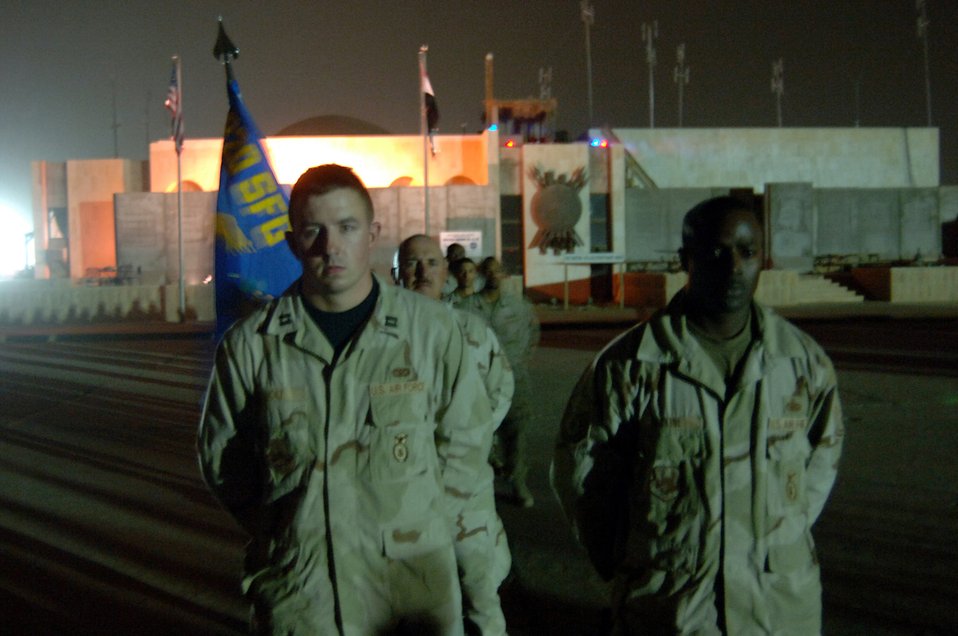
Airman killed during combat operations in Iraq

Members of the 732nd Expeditionary Security Forces Squadron stand in formation at the patriation ceremony for Airman 1st Class Leebernard E. Chavis here Oct. 15. Airman Chavis, deployed to the 732nd ESFS was killed Oct. 14 while performing duties as a member of a U.S. military police training team supporting Iraqi police.